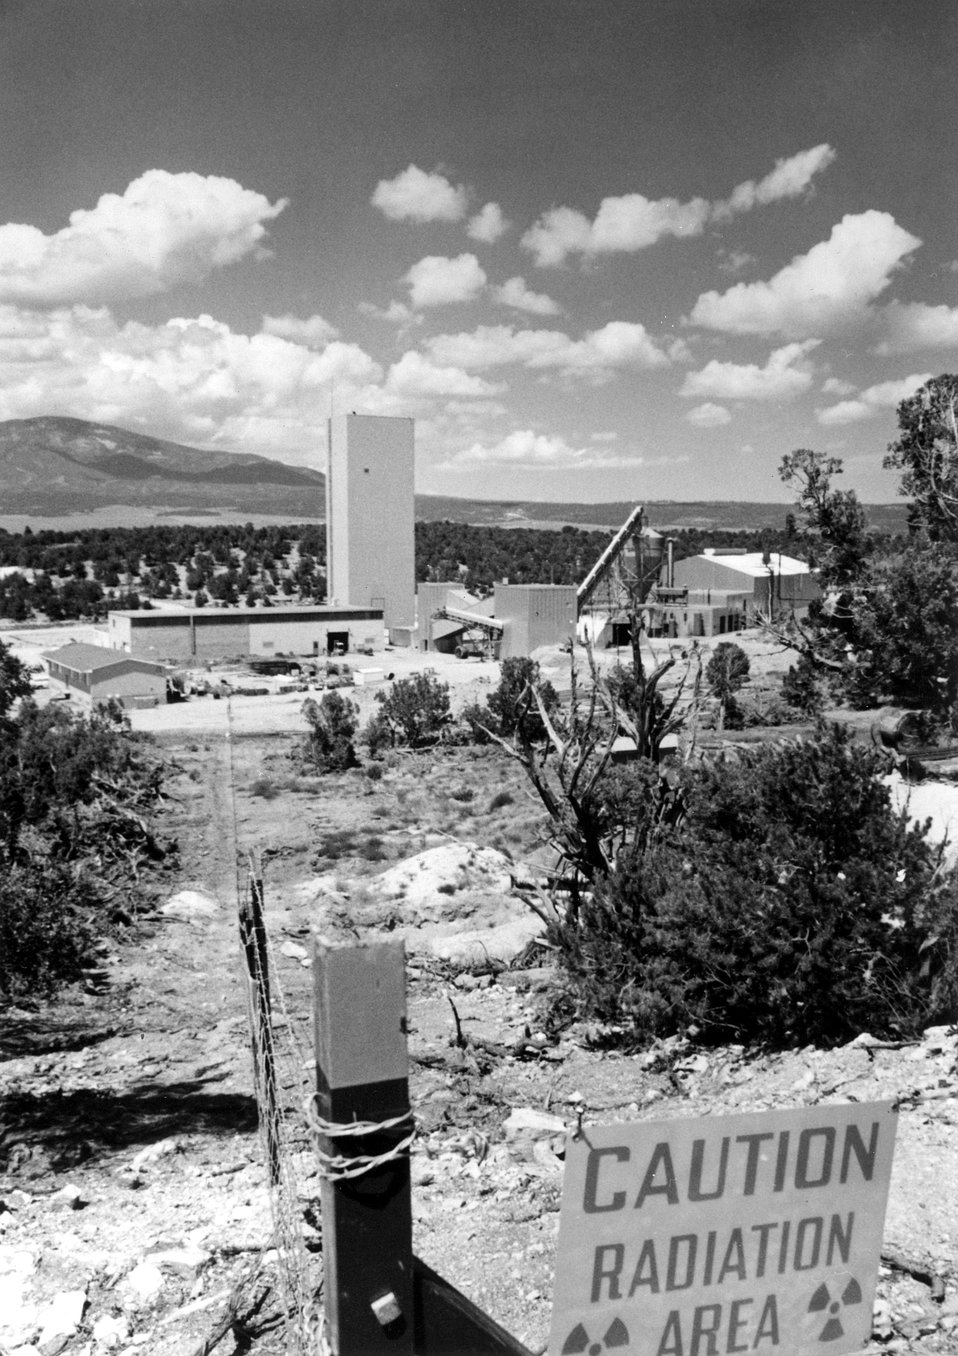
The Rio Algom Corporation's 500-ton per day uranium mining and milling operation near Moab, Utah. c. 1973